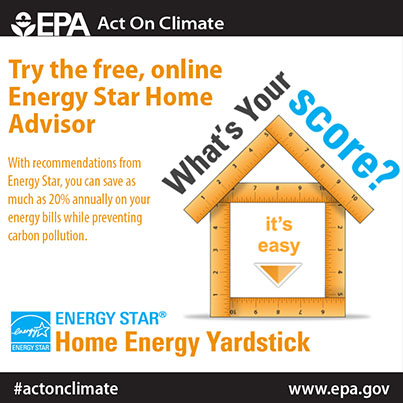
Try Energy Star's Home Energy Yardstick

Try the @ENERGYSTAR home energy yardstick to learn how to increase your energy efficiency, save up to 20% annually on bills and #ActOnClimate www.epa.gov/earthday/actonclimate/